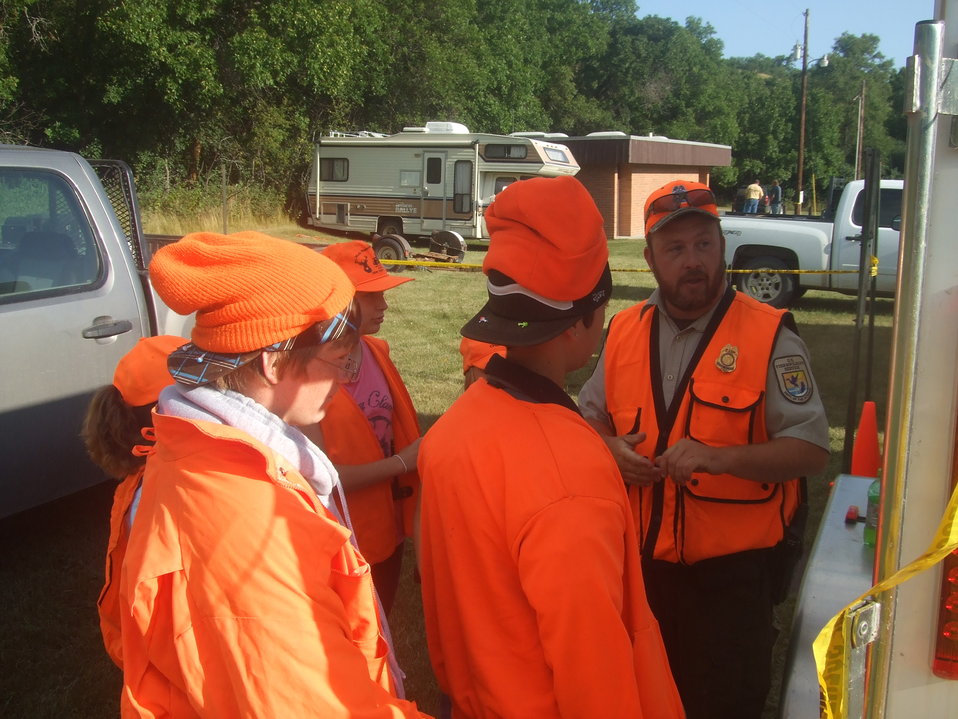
2011 Greenwing Day - Game Warden scenario session

Des Lacs National Wildlife Refuge, Tasker's Coulee

Going over the rules and regulations.